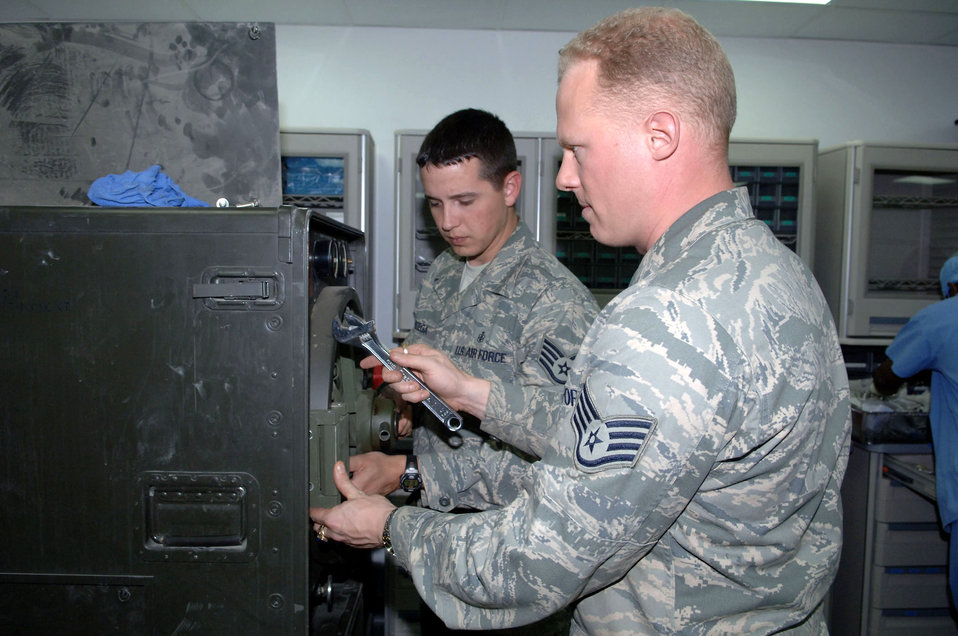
Biomedical maintainers ensure combat medical success

Staff Sgt. Orlando Ortega holds a sterilizer's door in place as Staff Sgt. Brian Cummings uses a wrench to remove a bolt Jan. 12 at Balad Air Base, Iraq. Both are 332nd Expeditionary Medical Support Squadron biomedical equipment technicians. Biomedical equipment repair technicians perform repairs, scheduled maintenance, inspections and calibrations on all biomedical equipment at the Air Force Theater Hospital. Sergeant Ortega is deployed from Barksdale Air Force Base, La. Sergeant Cummings is deployed from Langley Air Force Base, Va.